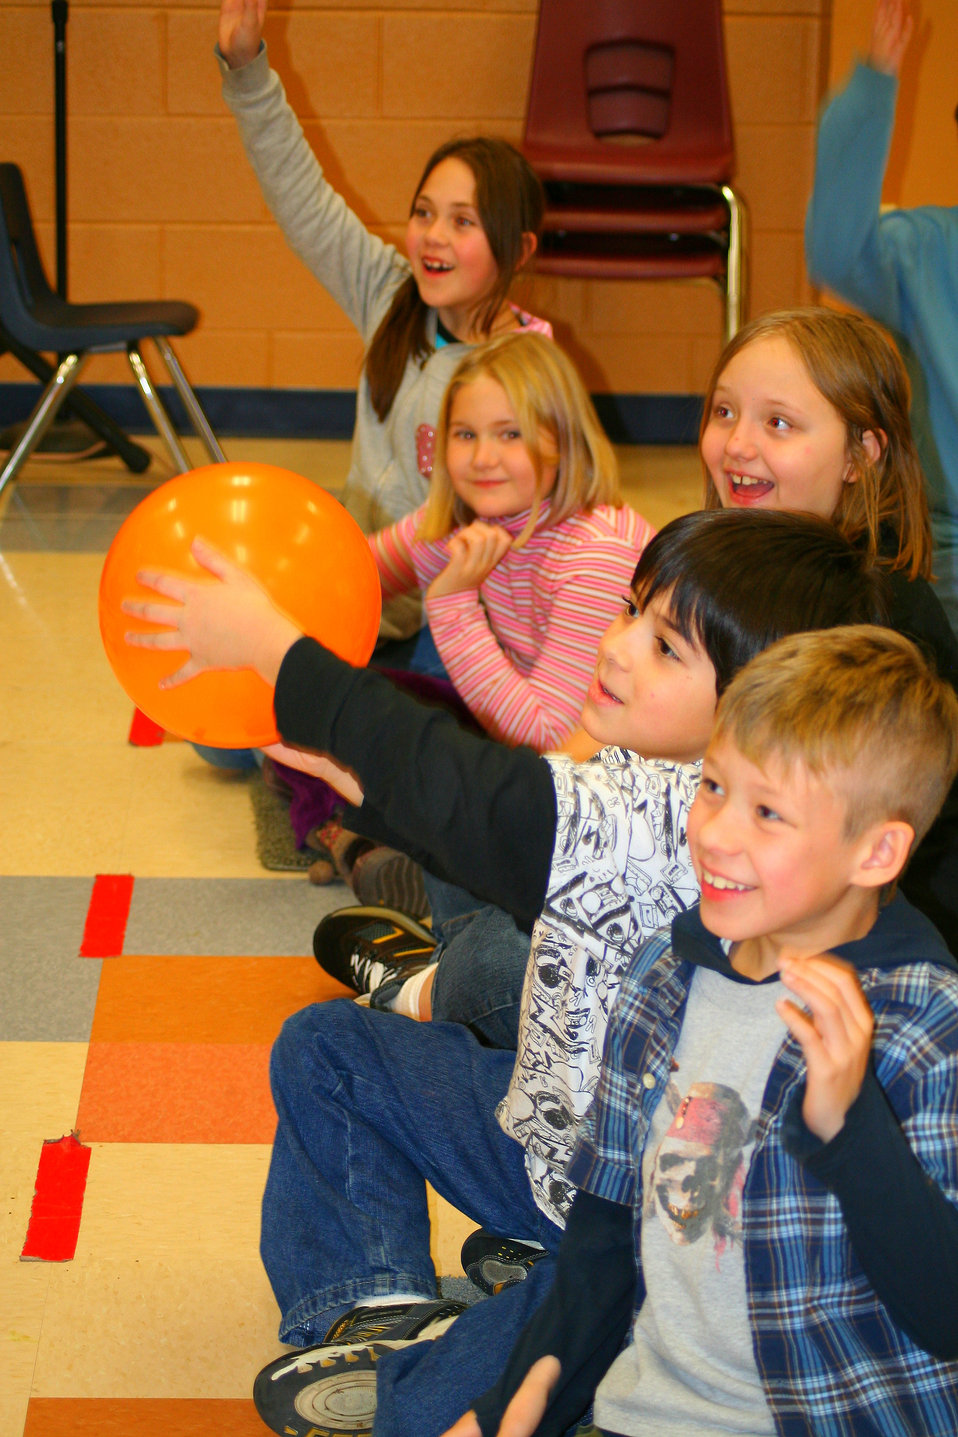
Physics really is

Third-, fourth- and fifth-grade students at West Elementary School in Colorado Springs, Colo., observe how liquid nitrogen affects a balloon during a